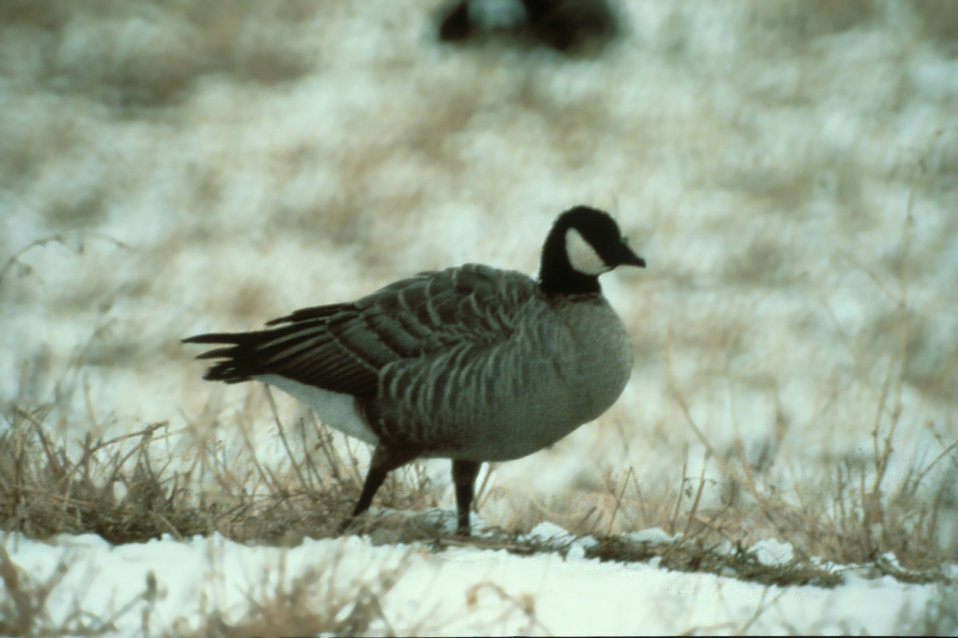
Canada goose.